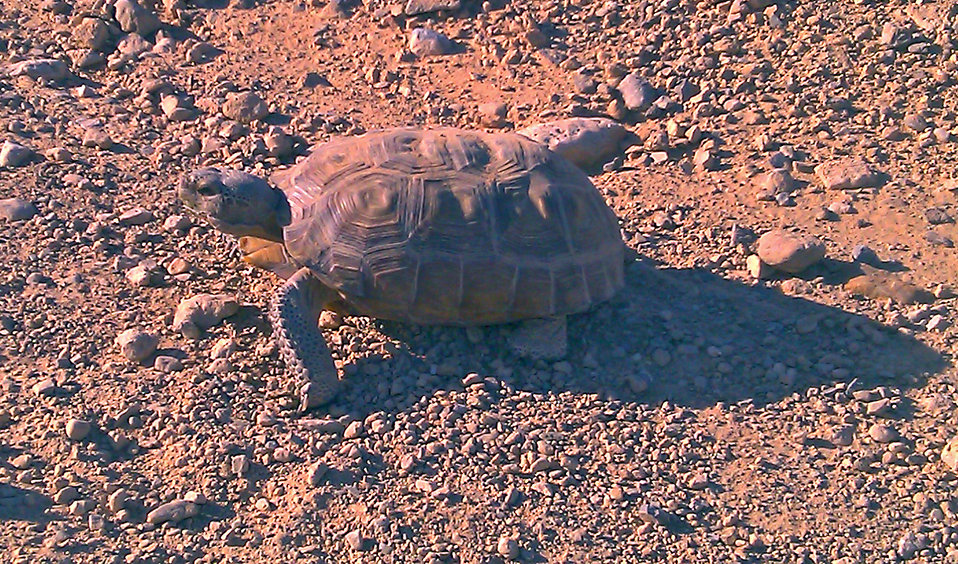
Desert Tortoise4

Desert tortoise near Las Vegas.